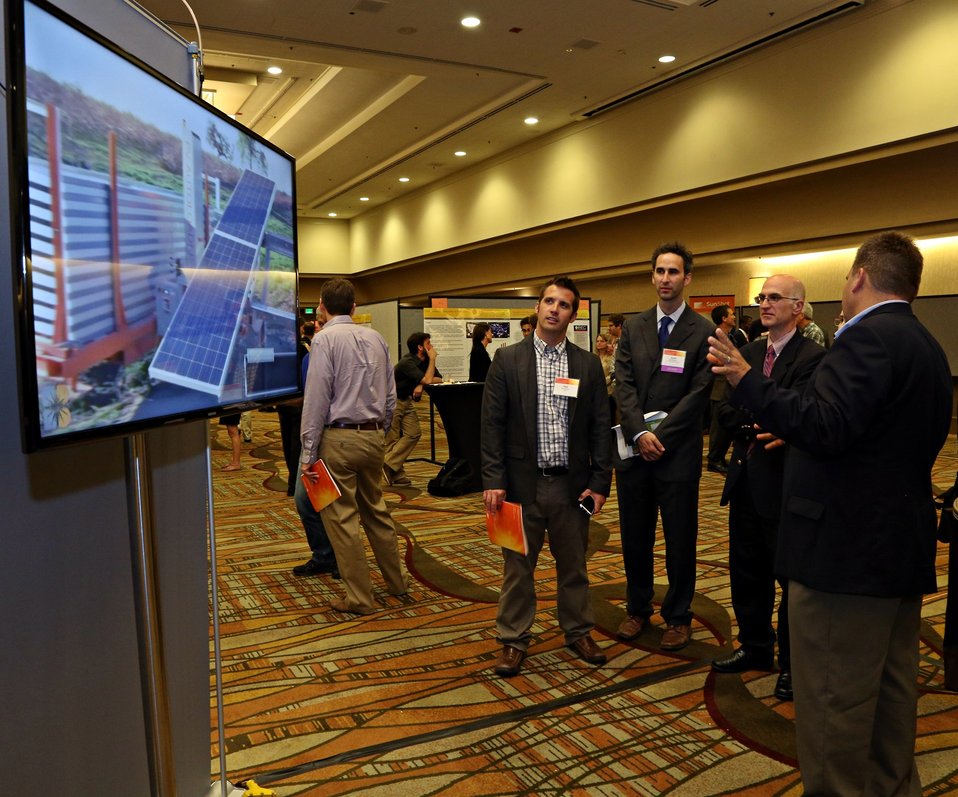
Tech Forum 19

Attendees were treated to video descriptions of technology advances at the Tech Forum.